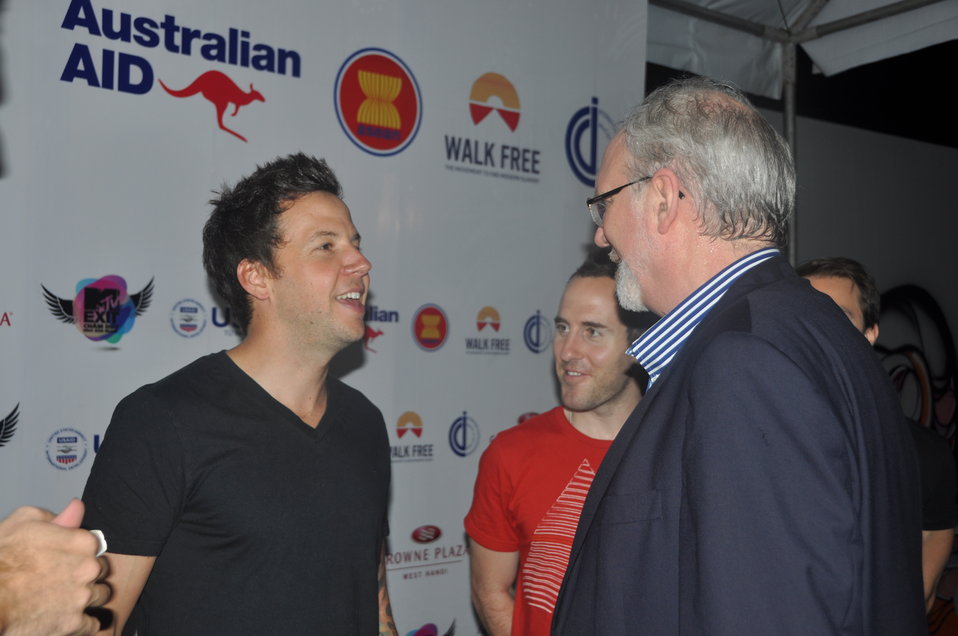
U.S. Ambassador David Shear meets Simple Plan at the MTV EXIT concert in Hanoi